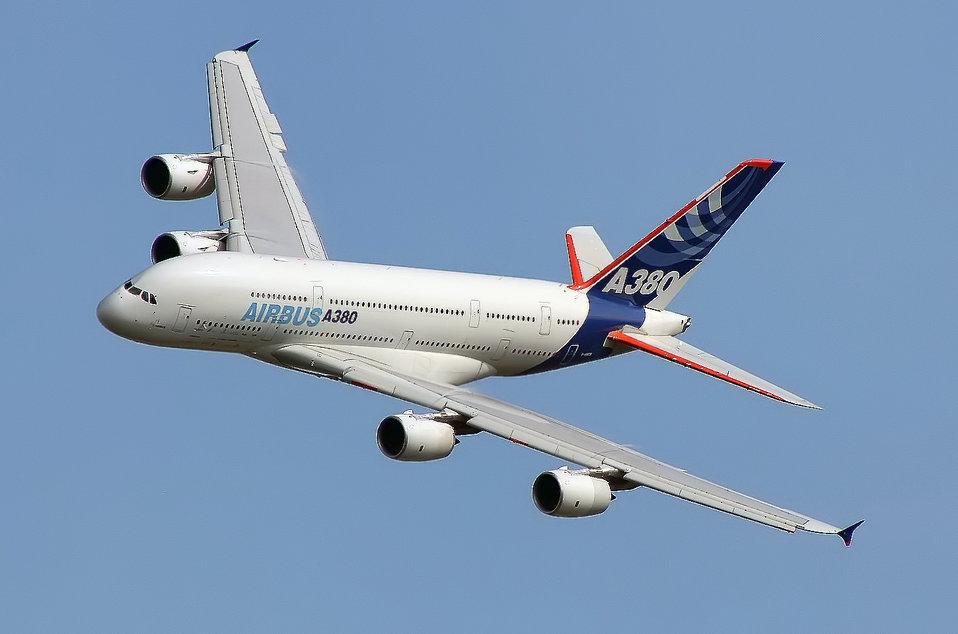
Deutsch: Airbus A380 in Linkskurve über Toulouse